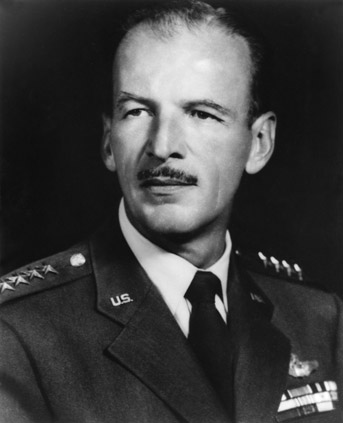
Gen. Laurence Kuter was an instrumental strategist in the formation of two major commands for the newly independent Air Force, Military Air Transport Service and Pacific Air Forces. He also became the commander. General Kuter was the youngest general officer in the Army in 1942, and he never served in the active rank of colonel. His was the first